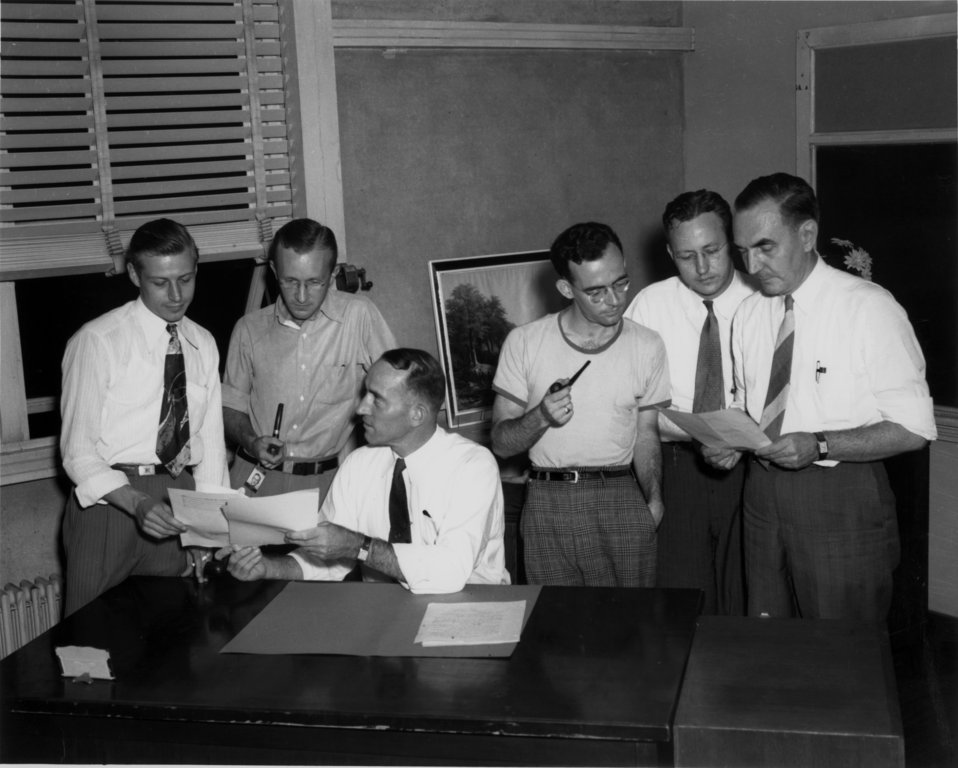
Town Council Meeting Oak Ridge

pro 995 DOE photo by Ed Westcott 9/10/45 Oak Ridge Tennessee